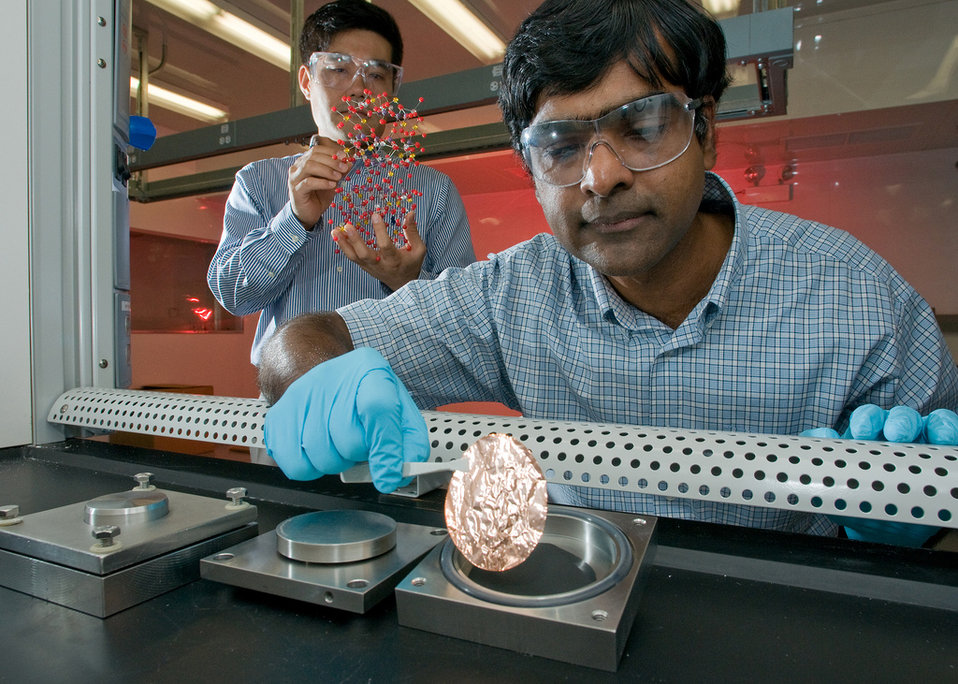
At Argonne, researchers assemble a battery for performance evaluation.

ANL studies every aspect of batteries, from materials for better catalysis to independent testing and analysis of battery lifetime and performance.